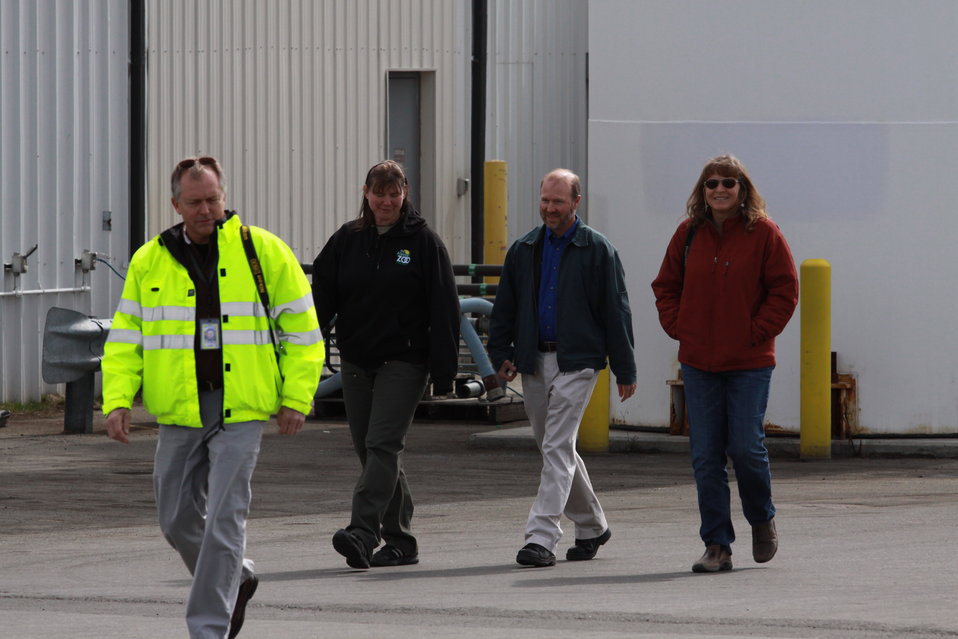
ups jensen volle miller